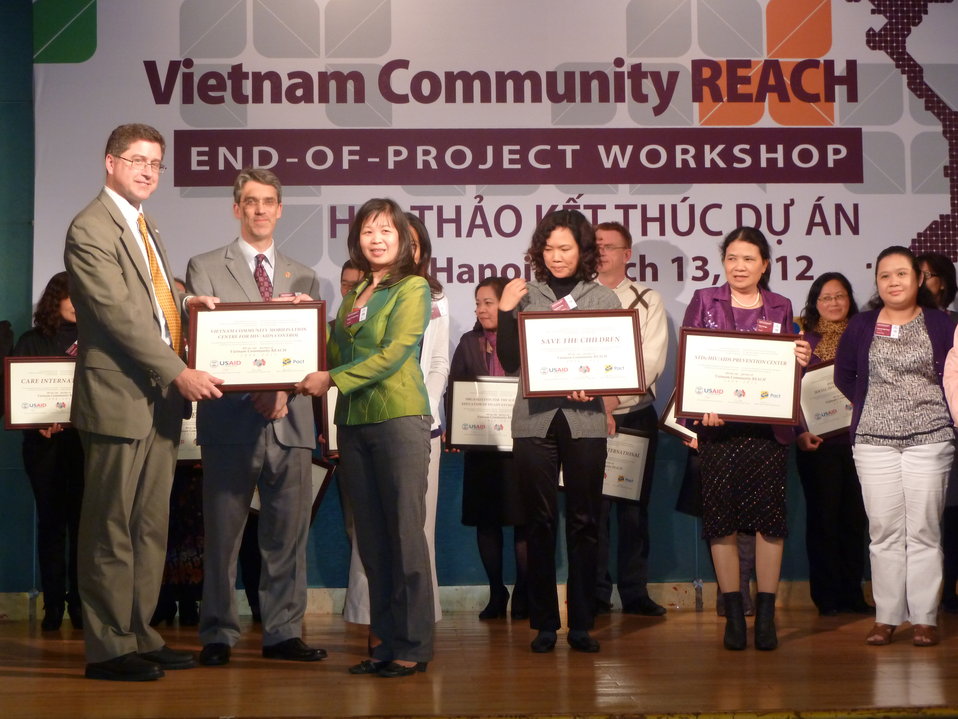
USAID, PEPFAR, and Pact award certificates to local and international partners for their work in addressing HIV in Vietnam

Community REACH project close-out with USAID and implementing partner, Pact